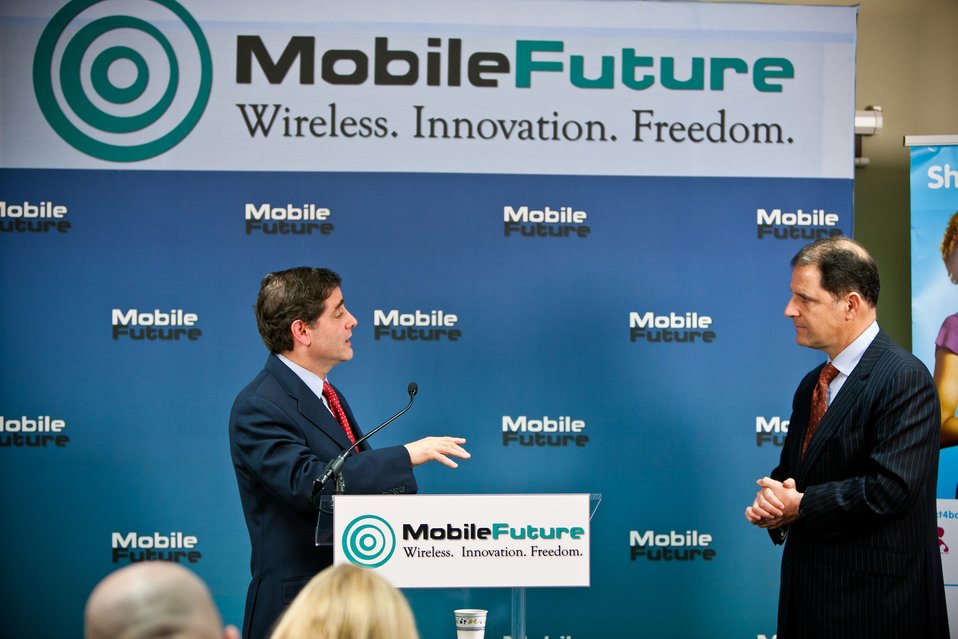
Genachowski Mobile Future Forum